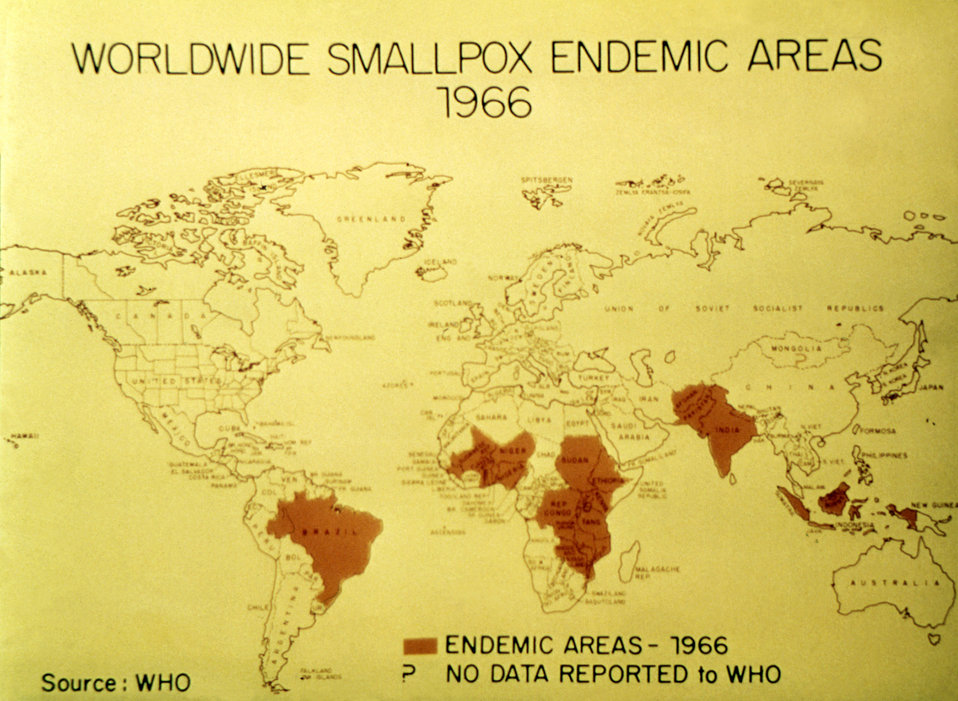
At the time, this 1966 map revealed the worldwide distribution of smallpox, and the countries in which it was endemic.